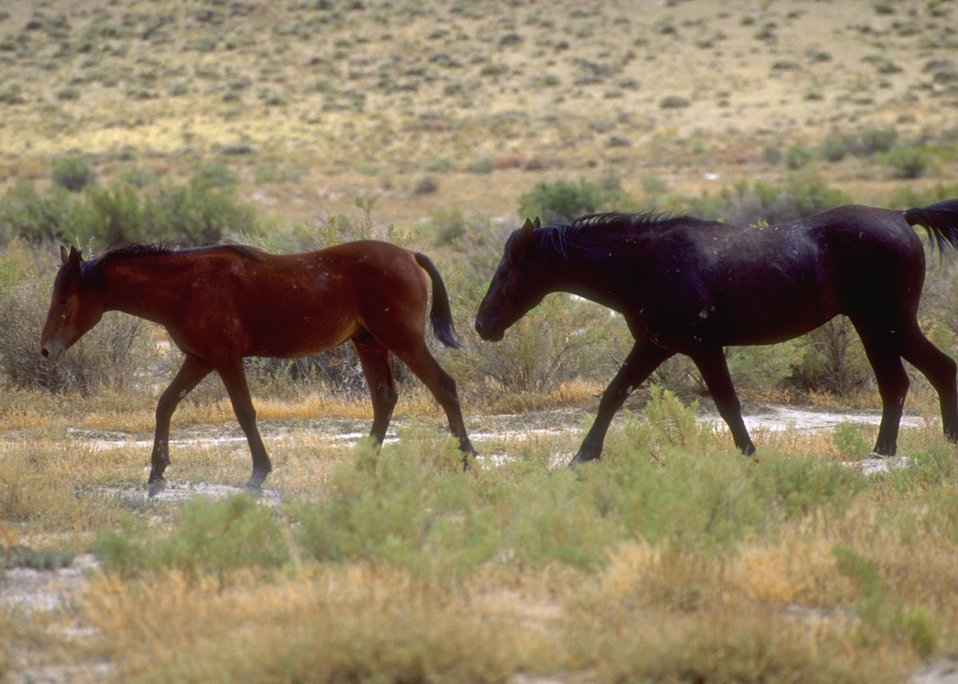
Wild horses, Rock Springs Field Office.